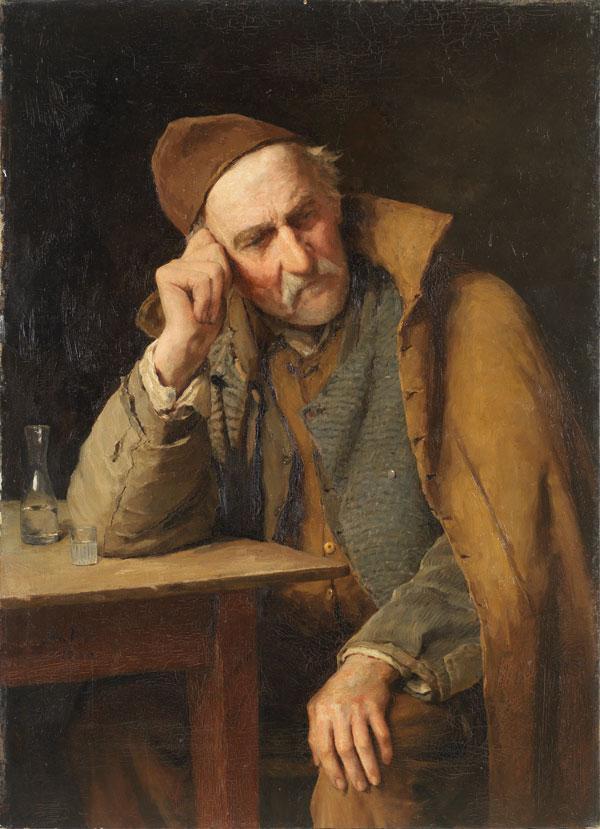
Albert Anker - Schnapstrinker